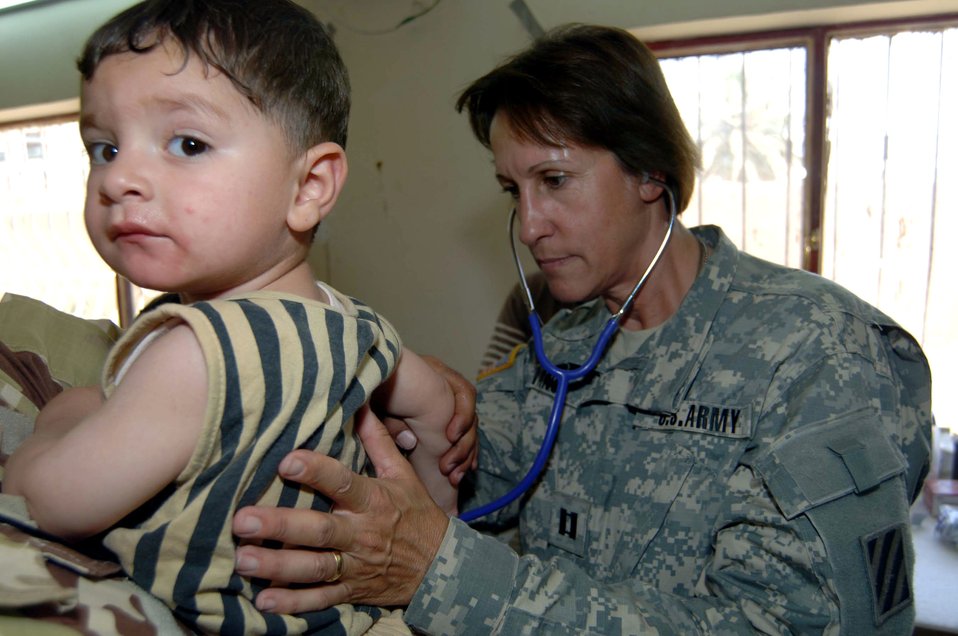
Medics lend a helping hand

Army Capt. Gail Evans provides care to an Iraqi child June 21 at the Civil-Military Operations Center medical clinic at Camp Striker, Iraq. Captain Evans is a 478th Civil Affairs Battalion medic. The Civil-Military Operations Center medical clinic provides free medical service to impoverished Iraqi citizens.